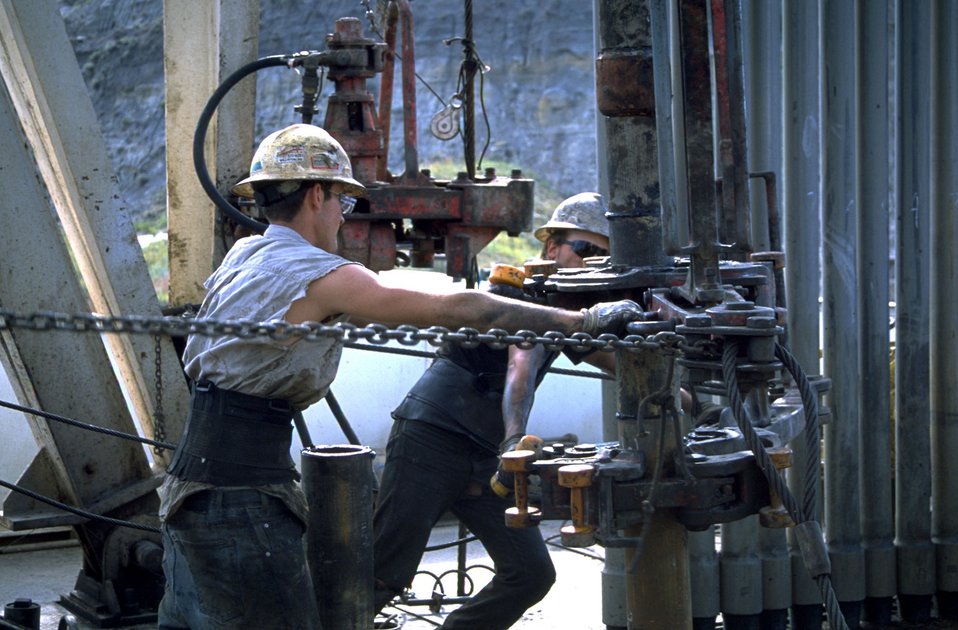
Oil rig workers picking up a drill pipe joint